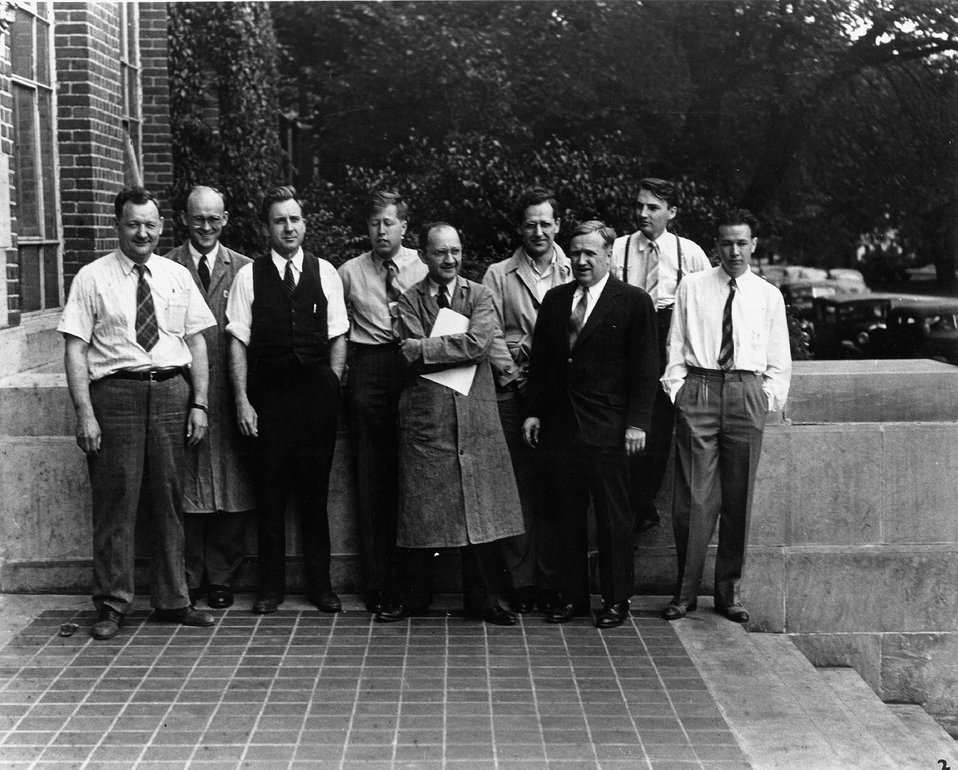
Oppenheimer.